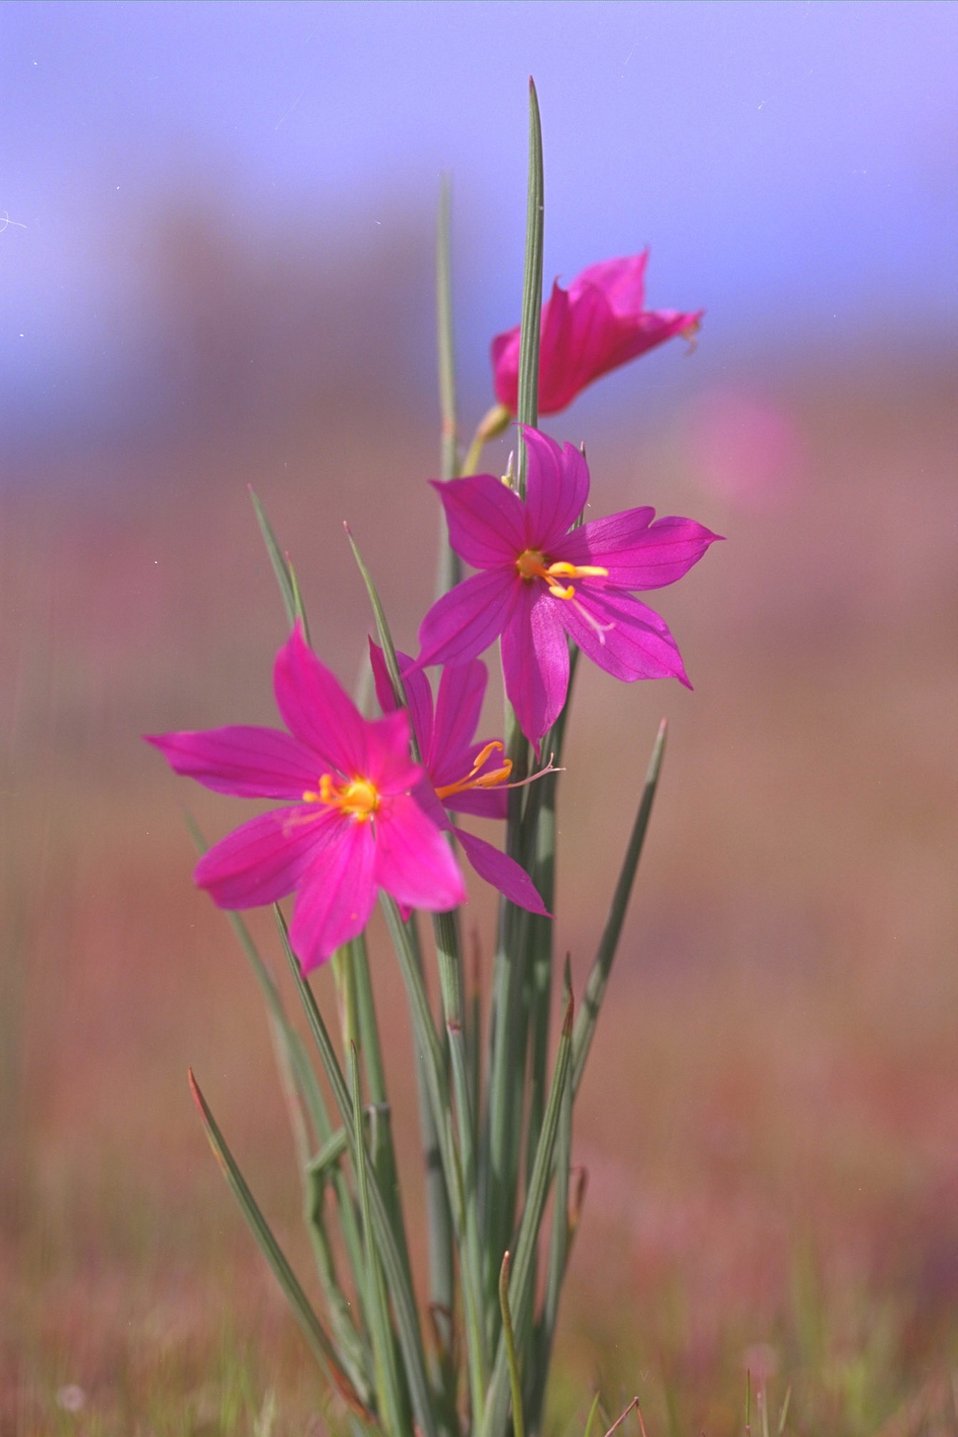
Grass Widows, also called Purple-eyed Grass, (Sisyrinchium douglasii) at Upper Table Rock.